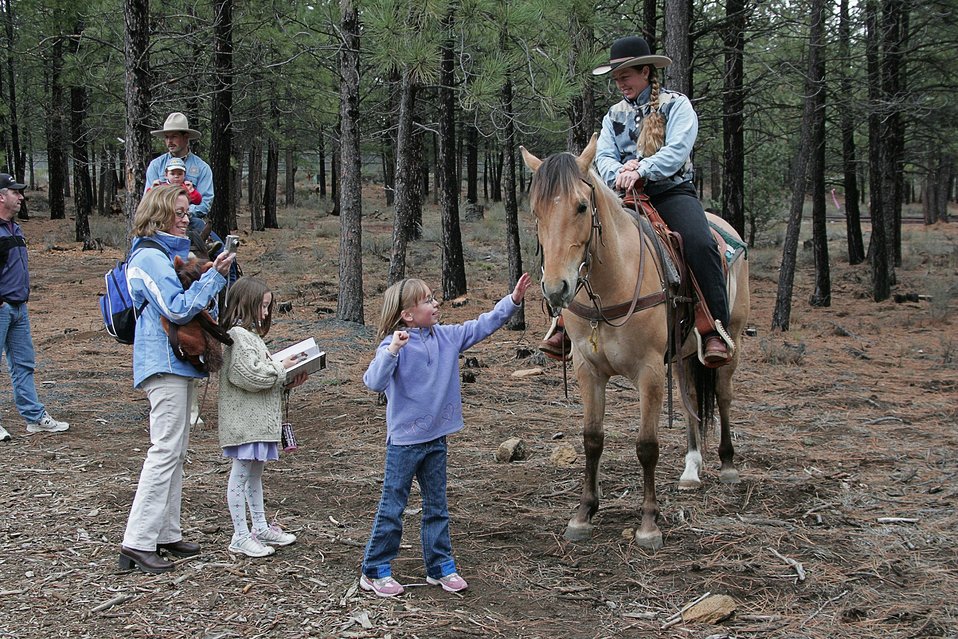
Horse Trainer, Kitty Lauman and Spirit make a new friend at the High Desert Museum wild horse adoption.